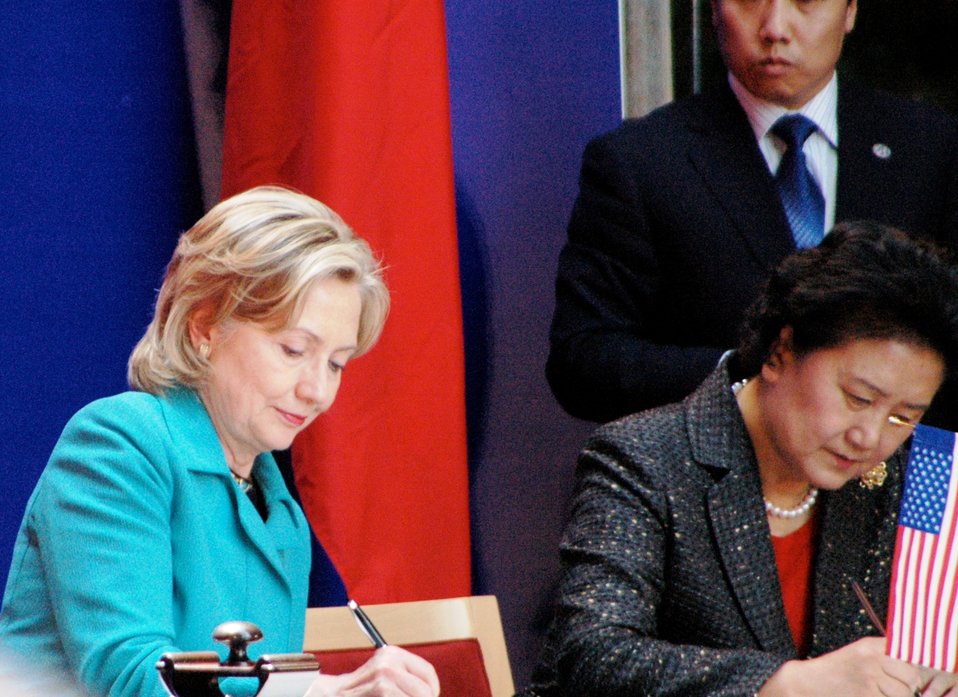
Secretary Clinton and Chinese State Councilor Liu Yandong Sign Agreement

U.S. Secretary of State Hillary Rodham Clinton and Chinese State Councilor Liu Yandong sign the U.S.-China Consultation on People-to-People Exchange agreement at the National Center for the Performing Arts in Beijing, China, May 25, 2010.